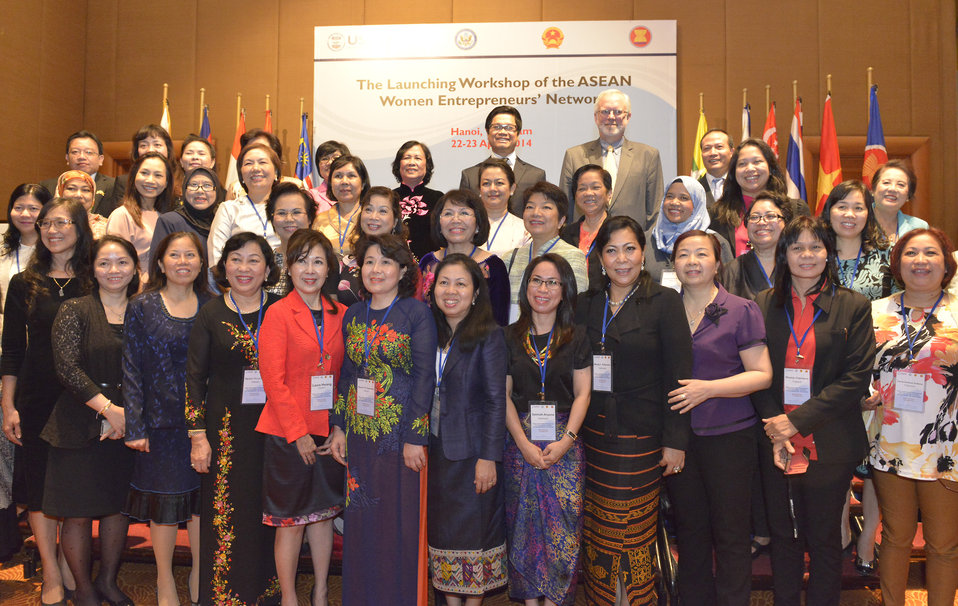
ASEAN Women Entrepreneurs' Network

USAID/Vietnam